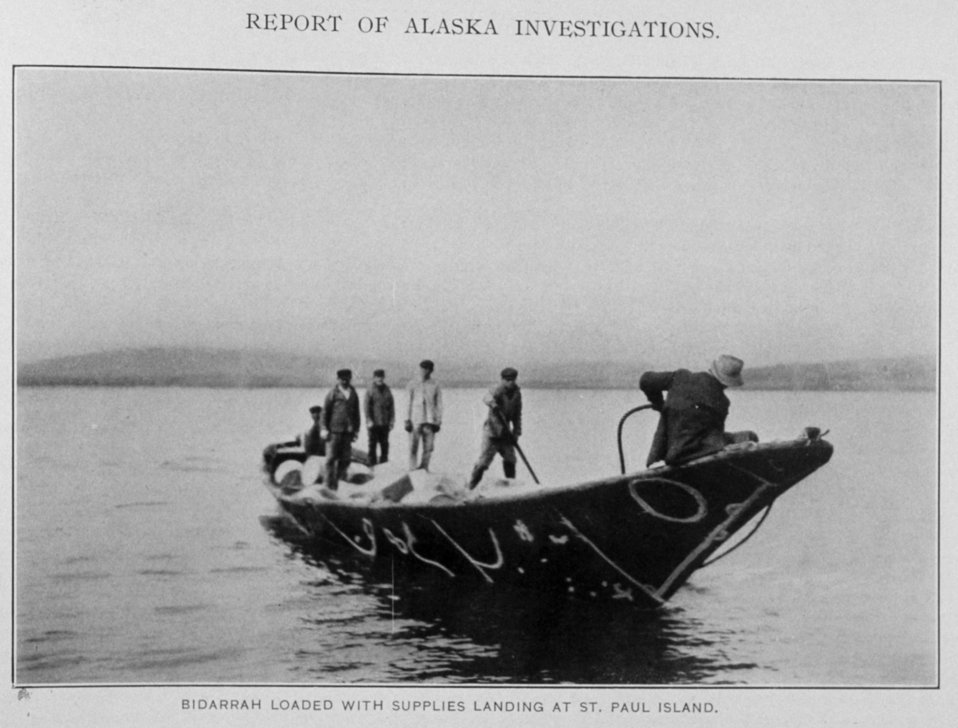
Bidarrah Loaded with Supplies Landing at St. Paul Island. In: 'Report of Alaska Investigations,' by E. Lester Jones, p. 140, 1914. Department of Commerce, Bureau of Fisheries. Library Call No. 639: 945 J77.